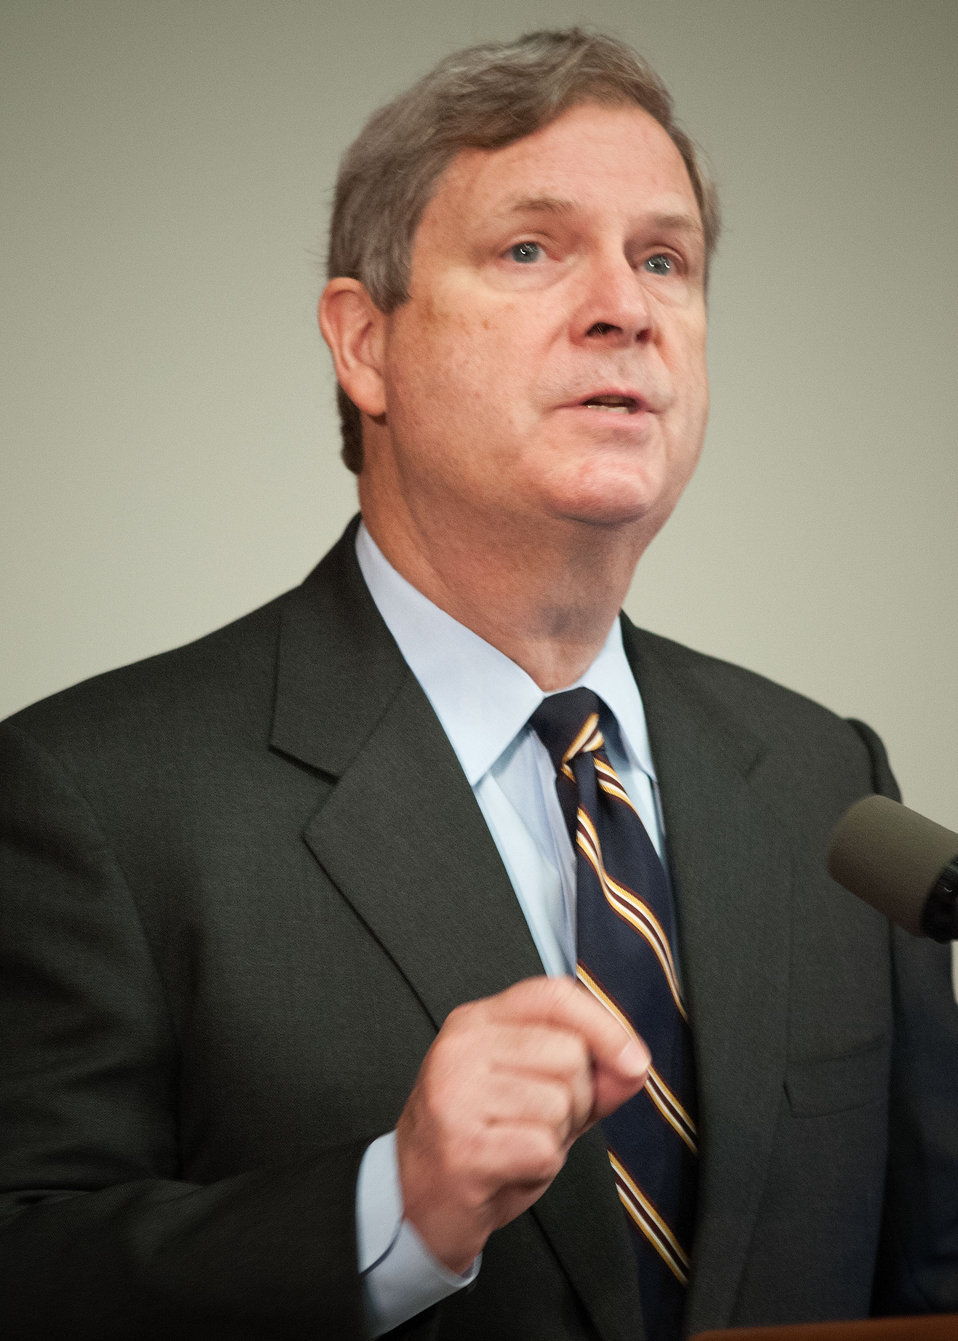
Agriculture Secretary Tom Vilsack addresses employees at the U.S. Department of Agriculture’s (USDA) Fourth Annual Cultural Transformation event held in Washington, D.C. on Tuesday, Dec. 4, 2012. The theme for the event “Faces of Cultural Transformation” Focusing on changing the way we serve our customers and cultural transformation’s benefits to employees. Secretary Vilsack spoke of the progress made during his administration’s tenure at the department and how USDA is cited as a positive example of cultural transformation in the workplace.